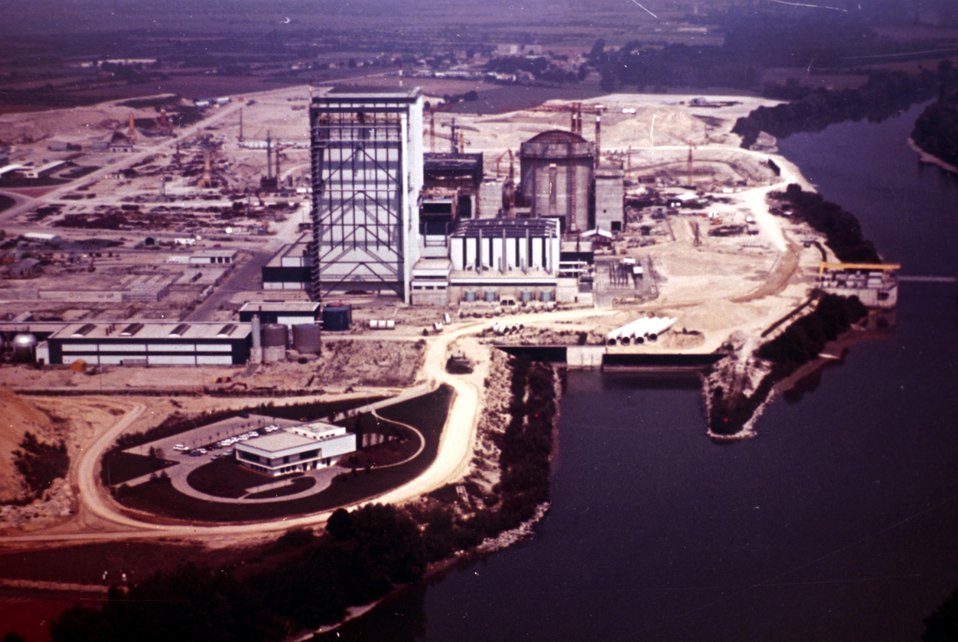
Une centrale thermique nuclÐaire.